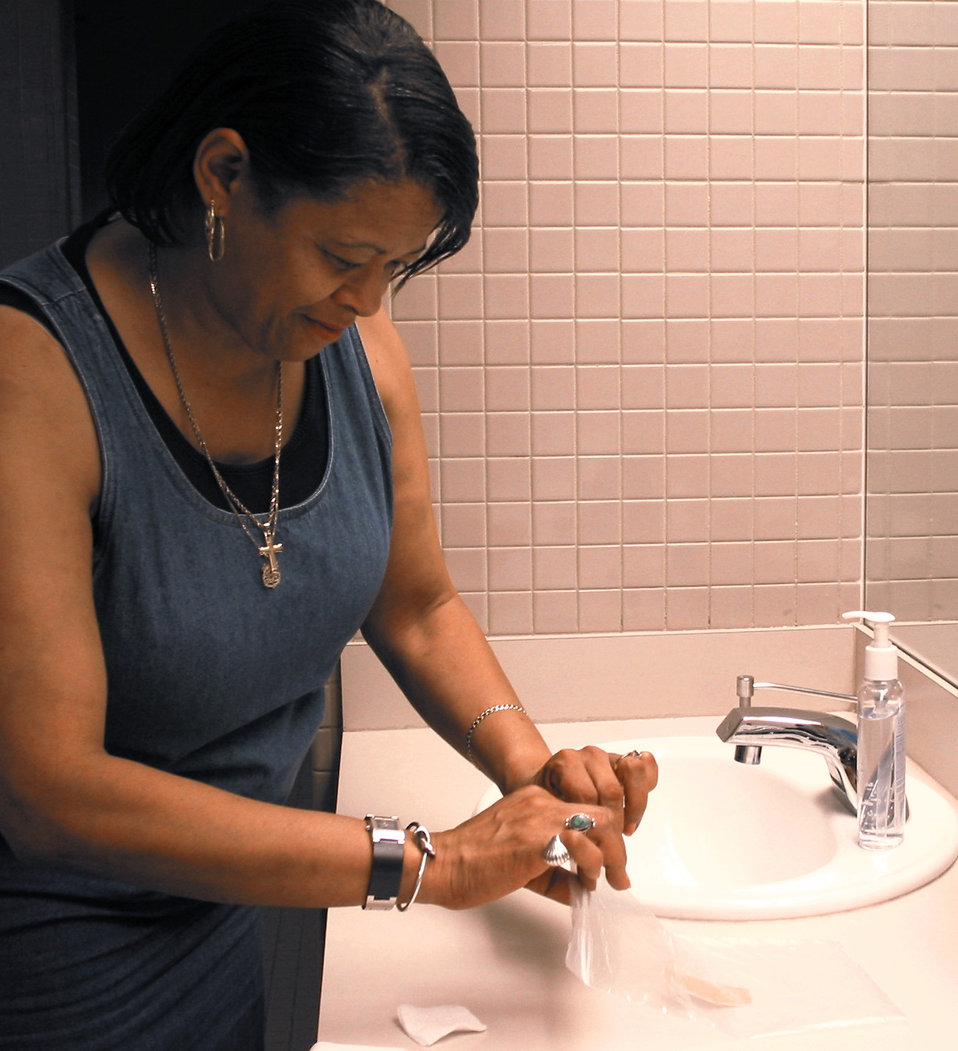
This smallpox vaccinee is shown here placing a contaminated waterproof bandage into a sealable plastic bag.